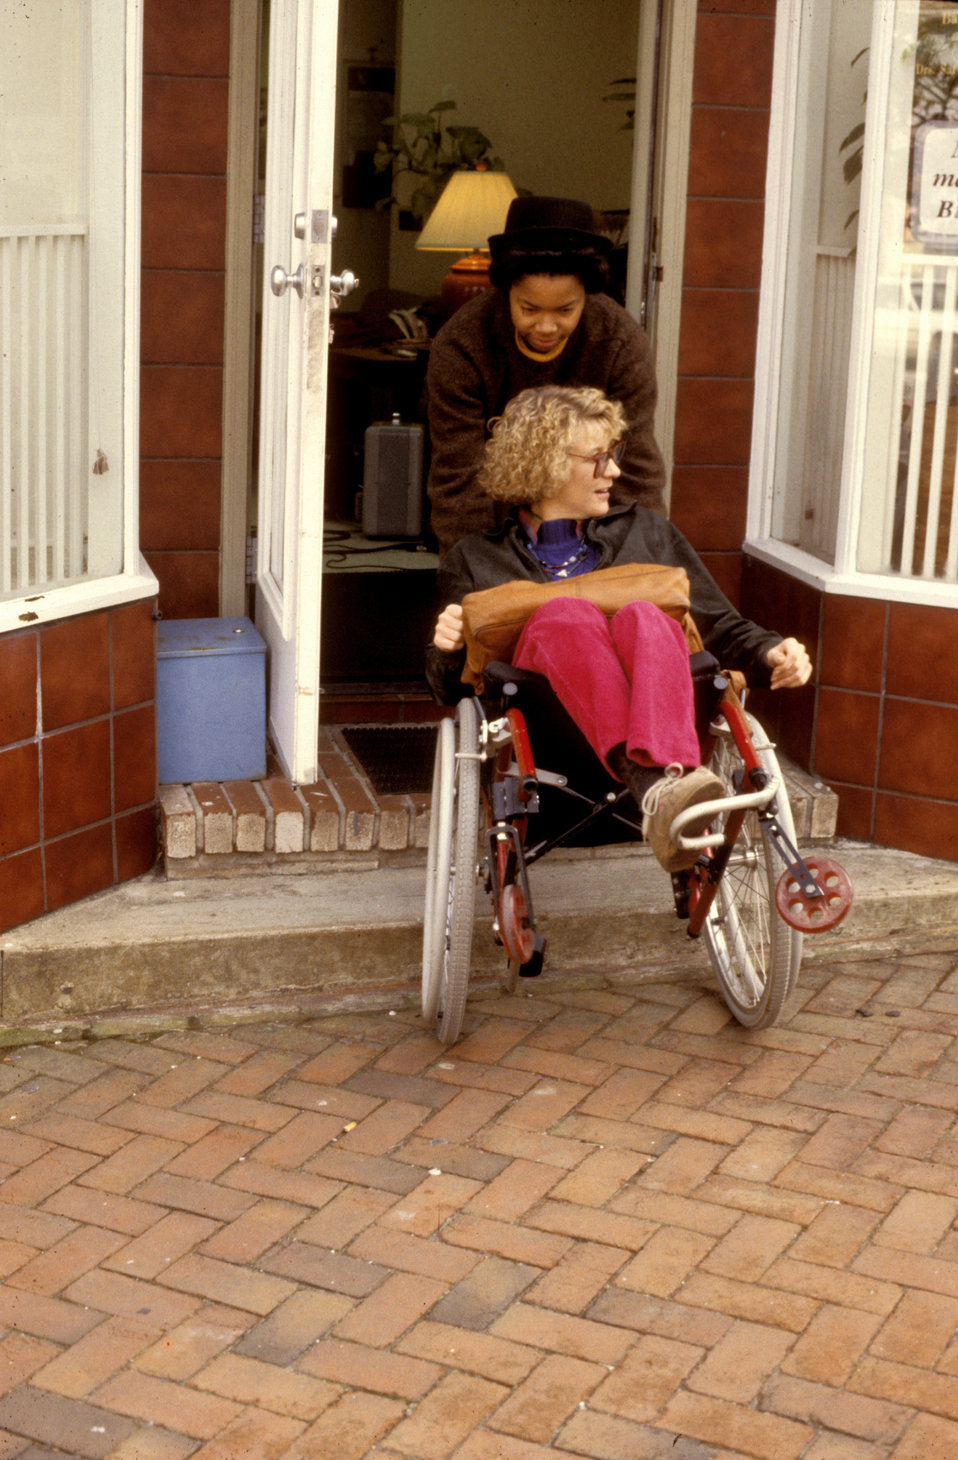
In this 1993 image, the front of a women's clinic revealed a front door that was accessed via a two-step stoop, which made accessibility an issue for individuals having problems with mobility, such as the wheelchair-seated woman seen here, as she was assisted with exiting the facility. In PHIL 9022 - 9026, a temporary plywood ramp had been installed. Even though the temporary ramp installation made access easier for the mobility-challenged, it was constructed in such a way as to make it a dangerous, though short-term solution. PHIL images 9027 - 9029 depicted a long-term, permanent solution using a brick, concrete, and metal ramp. It was not the perfect solution, for it lacked adequate maneuvering room near the clinic doorway. It also clearly appeared as an add-on, or after-the-fact solution that protruded into the wide sidewalk, while attempting to blend in with the existing buildings by using brick, colored concrete, and wrought iron rails. Stairs had also been provided.